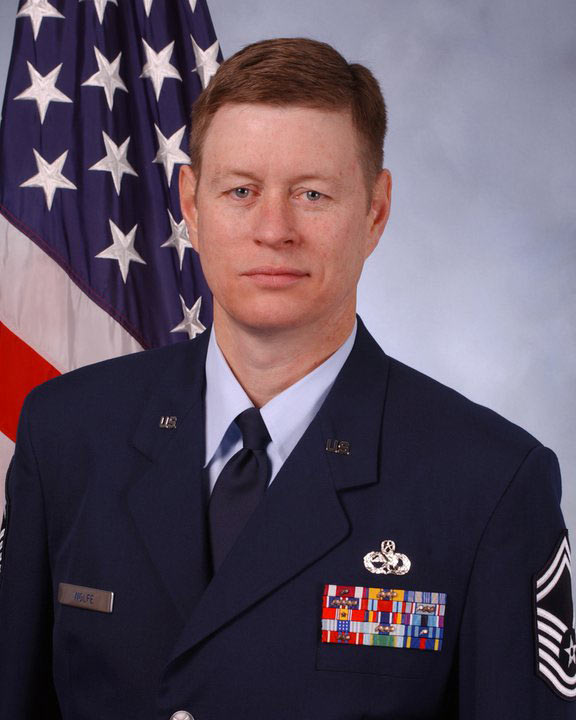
John Wolfe-Alaska Region

John Wolfe, who works in the Alaska Region Radio Shop, served in the Air Force from 1979 to 2006.